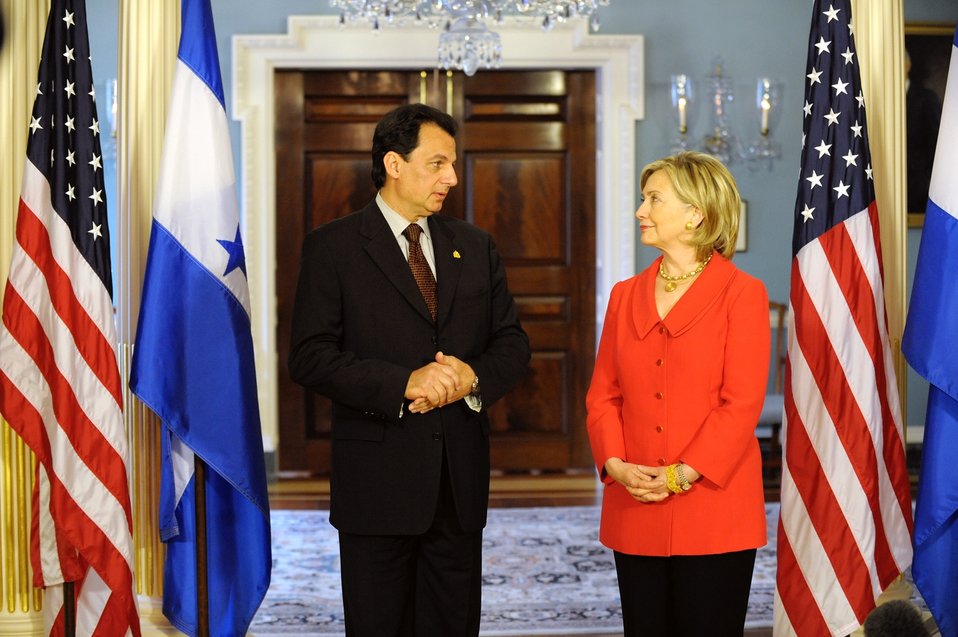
Secretary Clinton Hosts Bilateral Meeting With Honduran Foreign Minister Mario Canhuati

U.S. Secretary of State Hillary Rodham Clinton hosts bilateral meeting with His Excellency Mario Canhuati, Secretary of Foreign Relations of the Republic of Honduras, in the Treaty Room at the U.S. Department of State, Washington, DC, April 28, 2010.